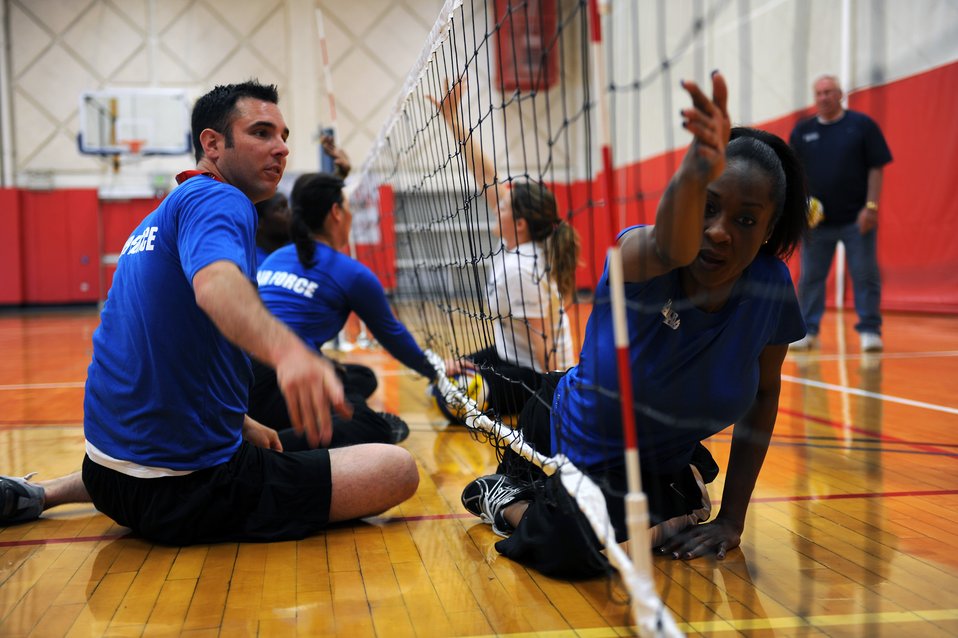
Warrior Games AF Volleyball Practice

Tech. Sgt. Elisha Abercrombie shows Staff Sgt. Staff Sgt. Christopher D'Angelo a volleyball technique during volleyball practice at the Warrior Games May 10, 2010, at the Olympic Training Center in Colorado Springs, Colo. The Warrior Games competition began May 10 and finishes on May 14, 2010 at the U.S. Olympic Training Center in Colorado Springs. Sergeant Abercrombie is assigned to the Air Force Services Agency in San Antonio, Texas. Sergeant D'Angelo is assigned to Malmstrom Air Force Base, Mont.